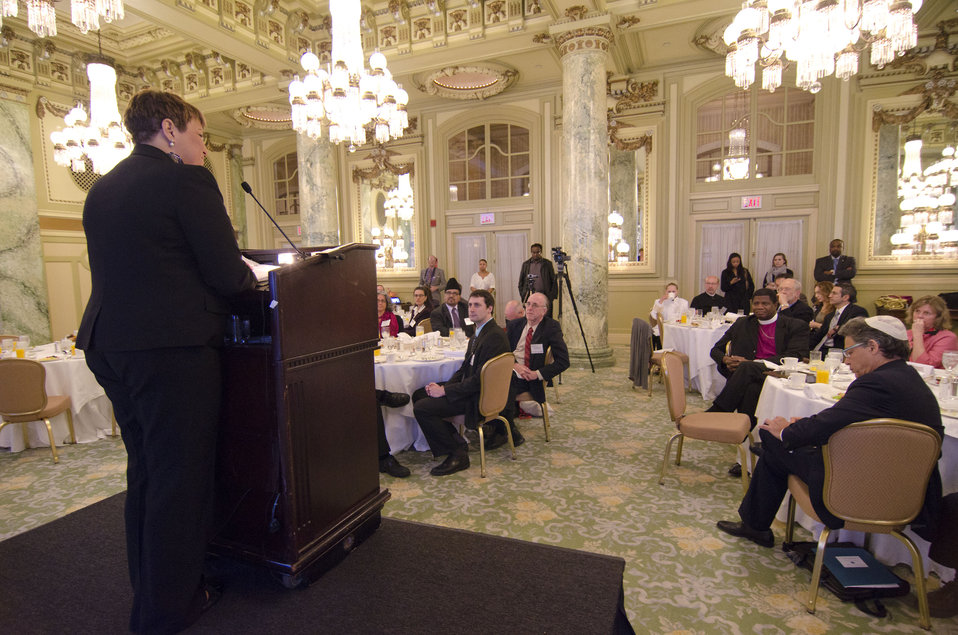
2011-05-05 NRCCCPrayerBreakfast 065

US EPA Administrator Lisa P Jackson addresses the room after accepting the Steward of God's Creation Award from the National Religious Coalition on Creation Care.